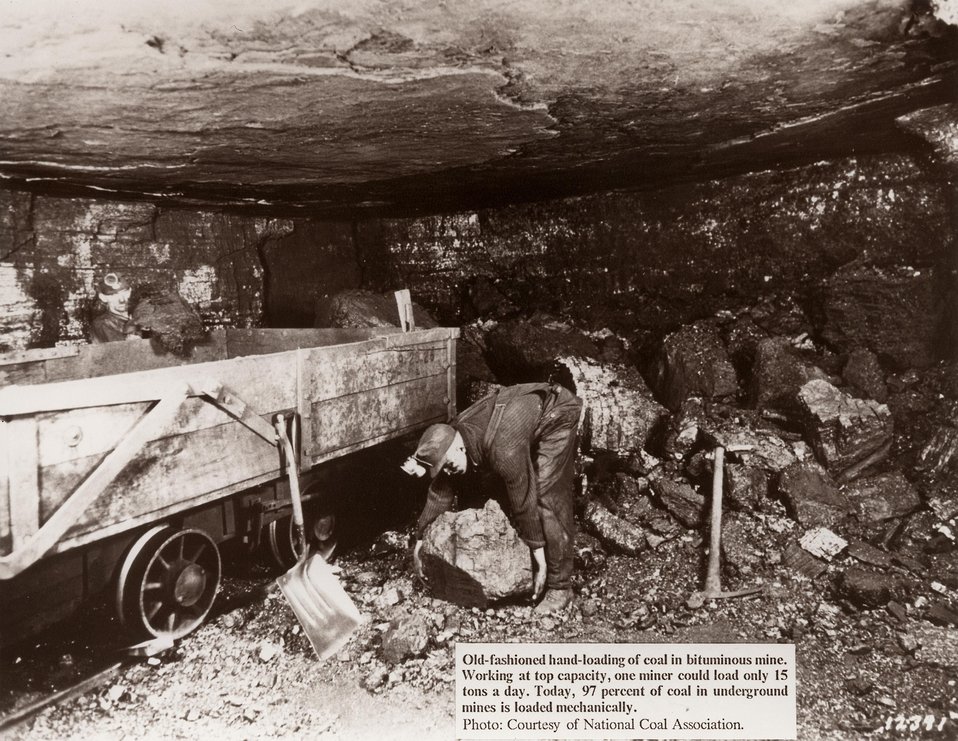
Old fashioned hand-loading of coal in bituminous mine.